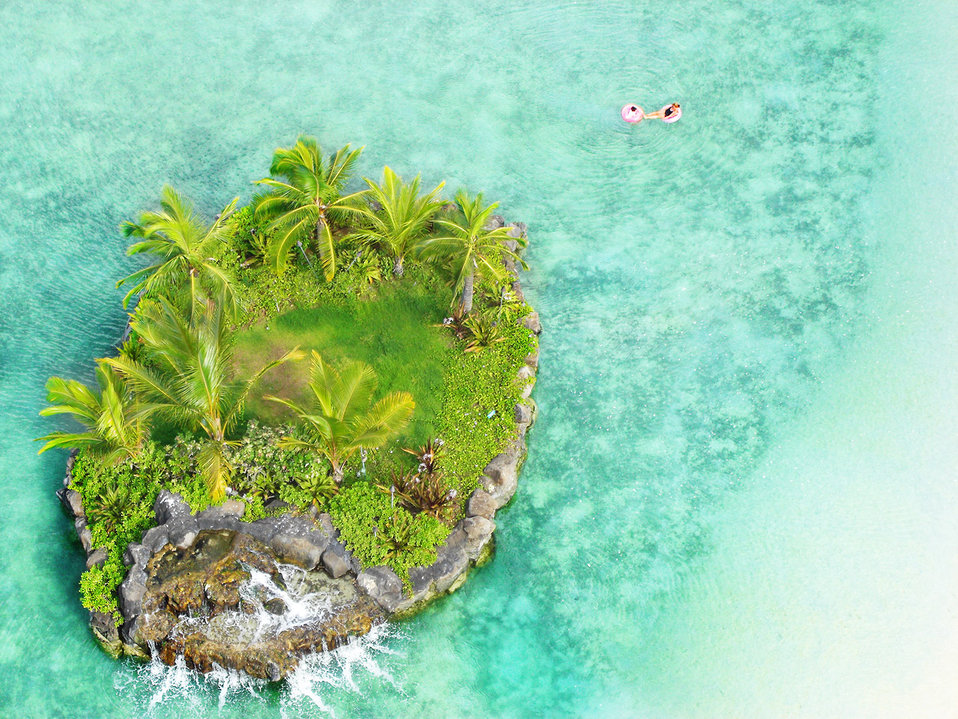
Small island.